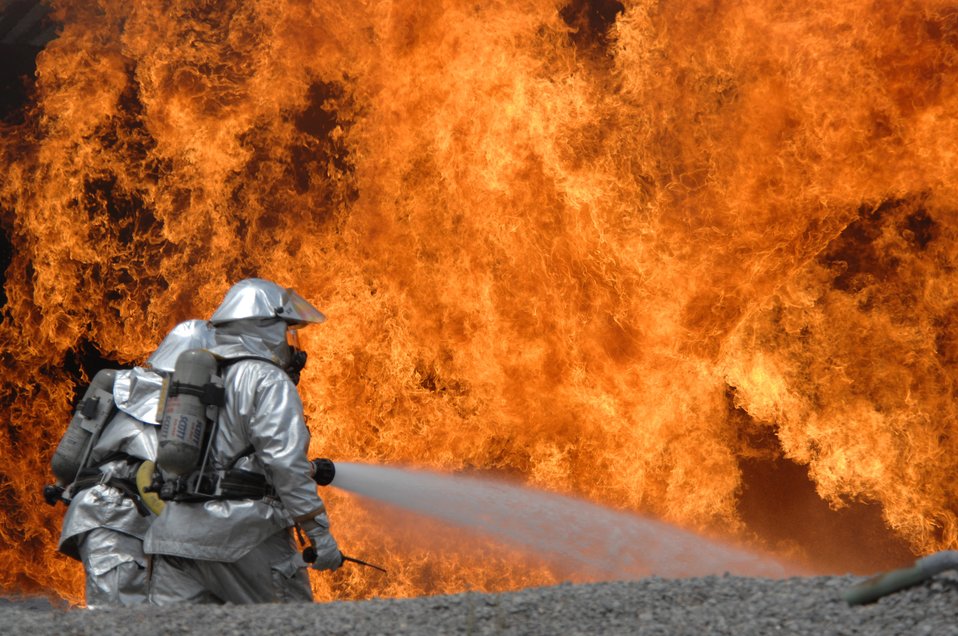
Taking the burn out of an exercise

Members of the 20th Civil Engineer Squadron fire protection flight neutralize a fire May 23 during a field training exercise at Shaw Air Force Base, S.C. The exercise incorporates realism into a training program while satisfying hands-on training requirements.